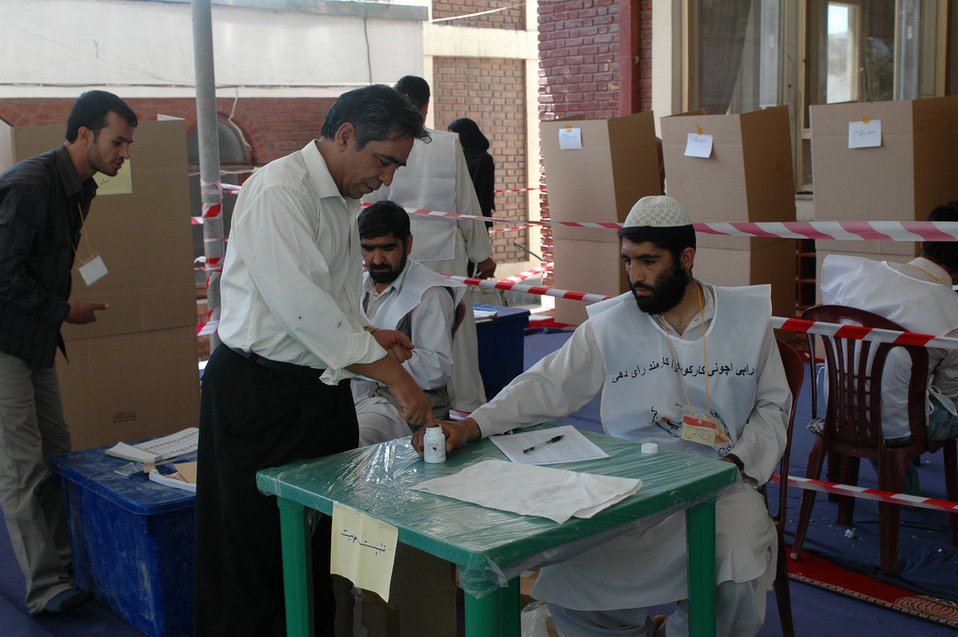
Inking finger in prep to vote